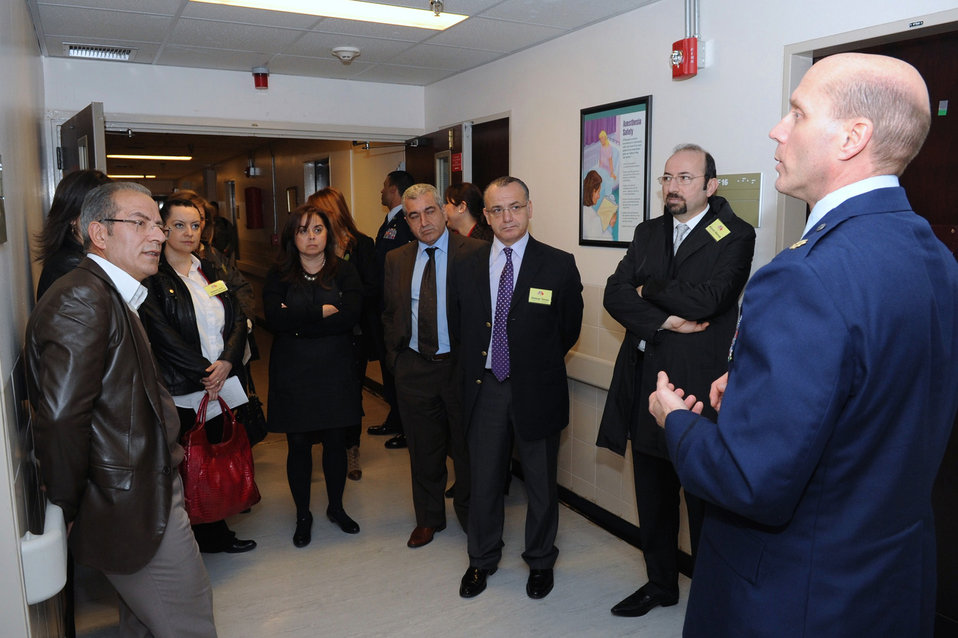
Incirlik Airmen strengthen partnership

Maj. Robert Chaplin briefs providers from Acibadem and Metropark, two hospitals in Turkey, on the surgical capabilities at Incirlik Air Base, Turkey, during the 39th Medical Group open house there March 10, 2011. Major Chaplin is the 39th MDG anesthesia element chief.